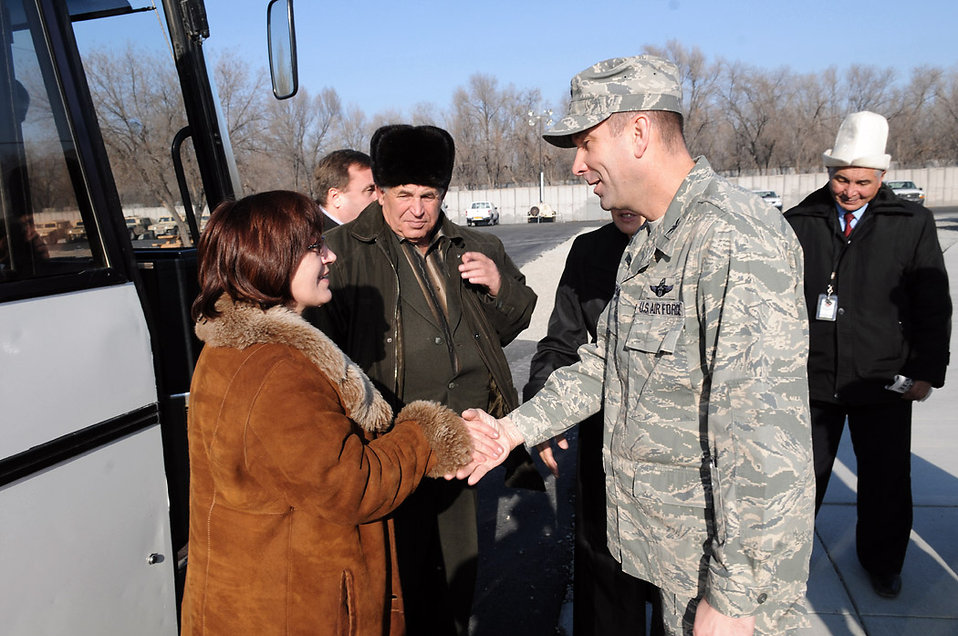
Afghan mayors visit Manas

Col. Christopher Bence greets Magiyat Abakirova as leaders from Kyrgyz villages arrive for a Dec. 10 tour of Manas Air Base, Kyrgyzstan. Leaders from six villages around Manas AB visited the base and had lunch with wing leaders. The visit strengthened friendships and issues affecting the local villages that the base can assist with were discussed. Colonel Bence is the 376th Air Expeditionary Wing commander. Ms. Abakirova is the chief accountant for Jany Pakhta village.